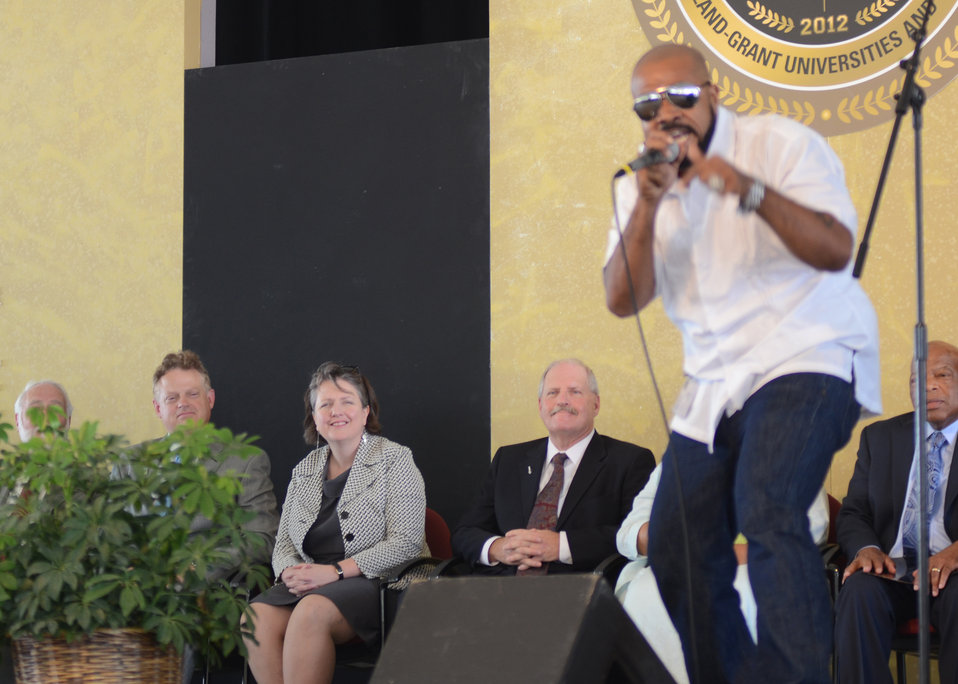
Agriculture Deputy Secretary Kathleen Merrigan watches Head-Roc perform at the opening ceremony for the 2012 Smithsonian Folklife Festival in Washington, D.C. on Wednesday, June 27, 2012. This year’s festival features three themes; “Creativity and Crisis” celebrates the 25th anniversary of the AIDS Memorial Quilt, “Citified,” explores the rich culture and community of neighborhoods east of the Anacostia, and the third “Campus and Community” celebrates 150 years of USDA and the Land-Grant university system.